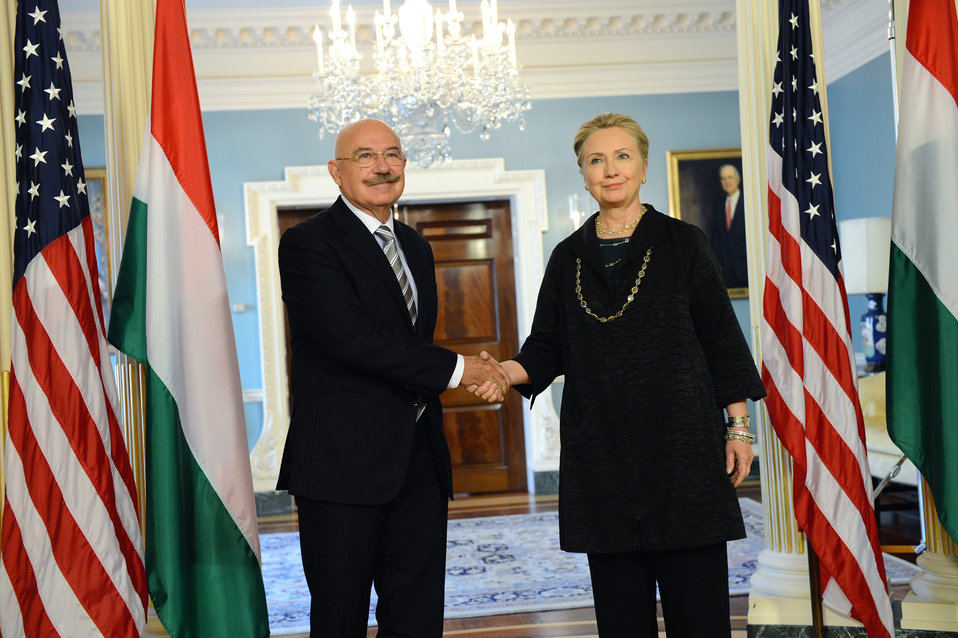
Secretary Clinton Meets With Hungarian Foreign Minister Martonyi

U.S. Secretary of State Hillary Rodham Clinton and Hungarian Foreign Minister Janos Martonyi address reporters in a joint press conference at the U.S. Department of State in Washington, D.C., October 18, 2012.